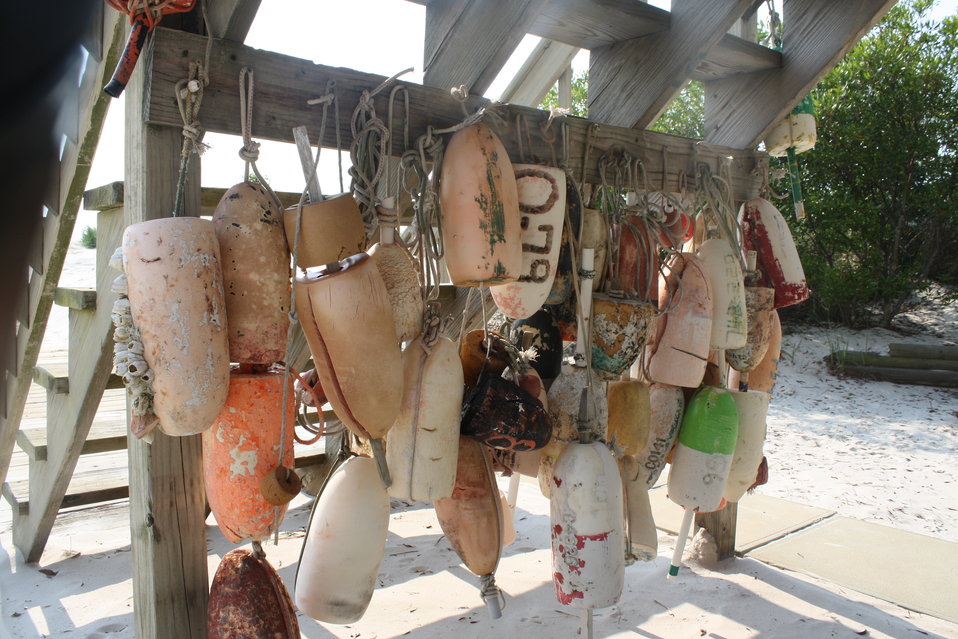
Bavon Beach project

Decorative boat buoys and fenders.